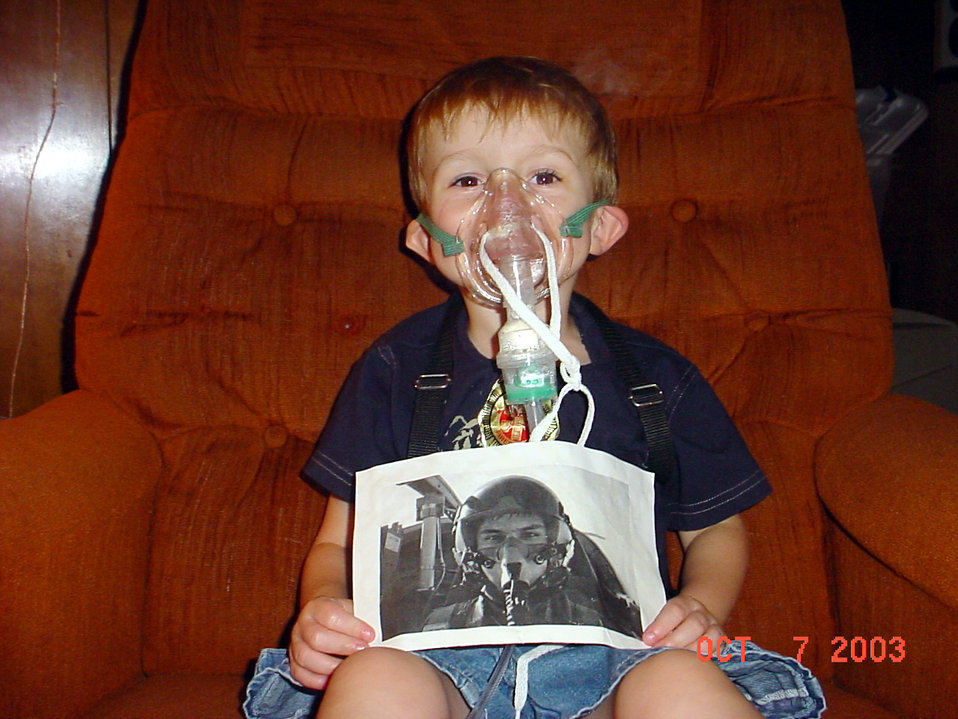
Pilot helps boy

NICEVILLE, Fla. -- Blake Henderson, 4, shares his photo of Capt. James Dykas during a treatment in October. The picture of Captain Dykas, a B1-B Lancer pilot, helped Blake accept wearing the mask he needs to take nebulizer treatments.